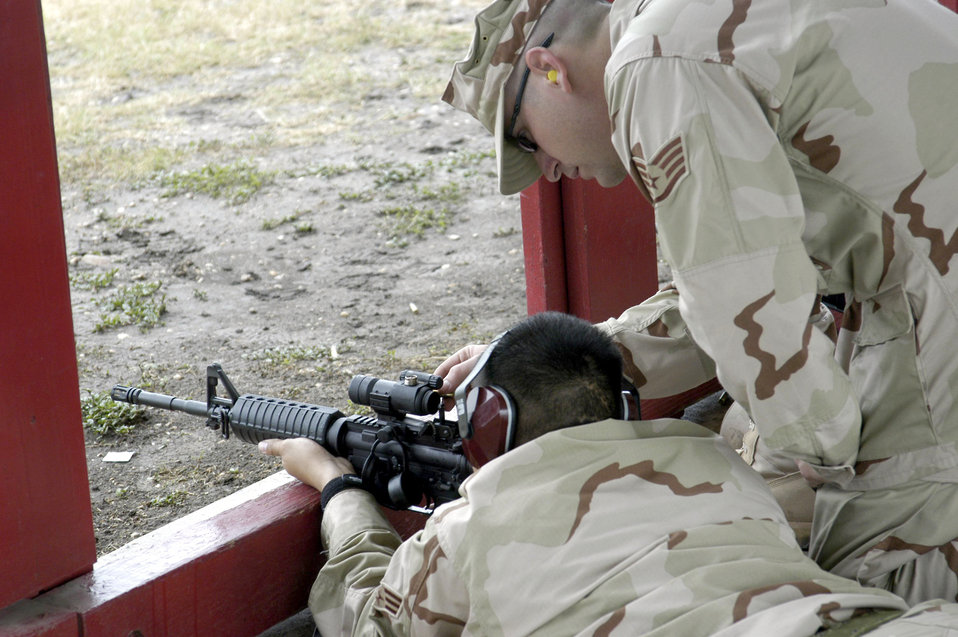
Convoy course prepares Airmen for duty in Iraq

LACKLAND AIR FORCE BASE, Texas -- Staff Sgt. Scott Grant (right) teaches Senior Airman Jeffery Salonga to use an M-4 carbine during a Basic Combat Convoy Course here. Sergeant Grant was helping students sight in the